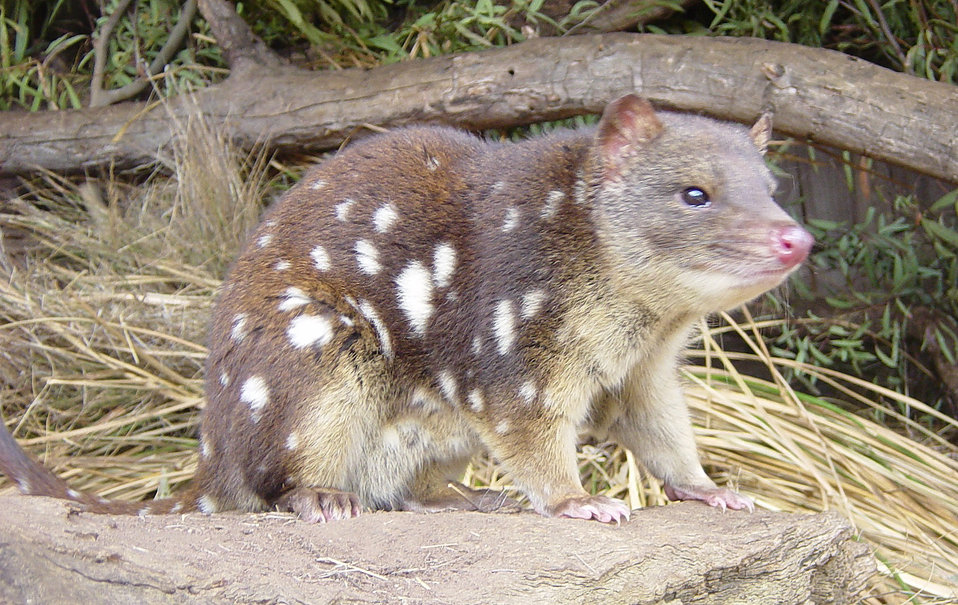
Quoll imaged at a rescue park, Tasmania, Austrailia, probably Tiger Quoll (Dasyurus maculatus), indicated by spots on tail
Photographer's note. This is a lucky through-the-fence shot using an old Sony camera as the animal was quite active. The small size of the lens is a distinct advantage in this case (my Canon xTi would not have been able to get the shot). Category:Dasyurus maculatus